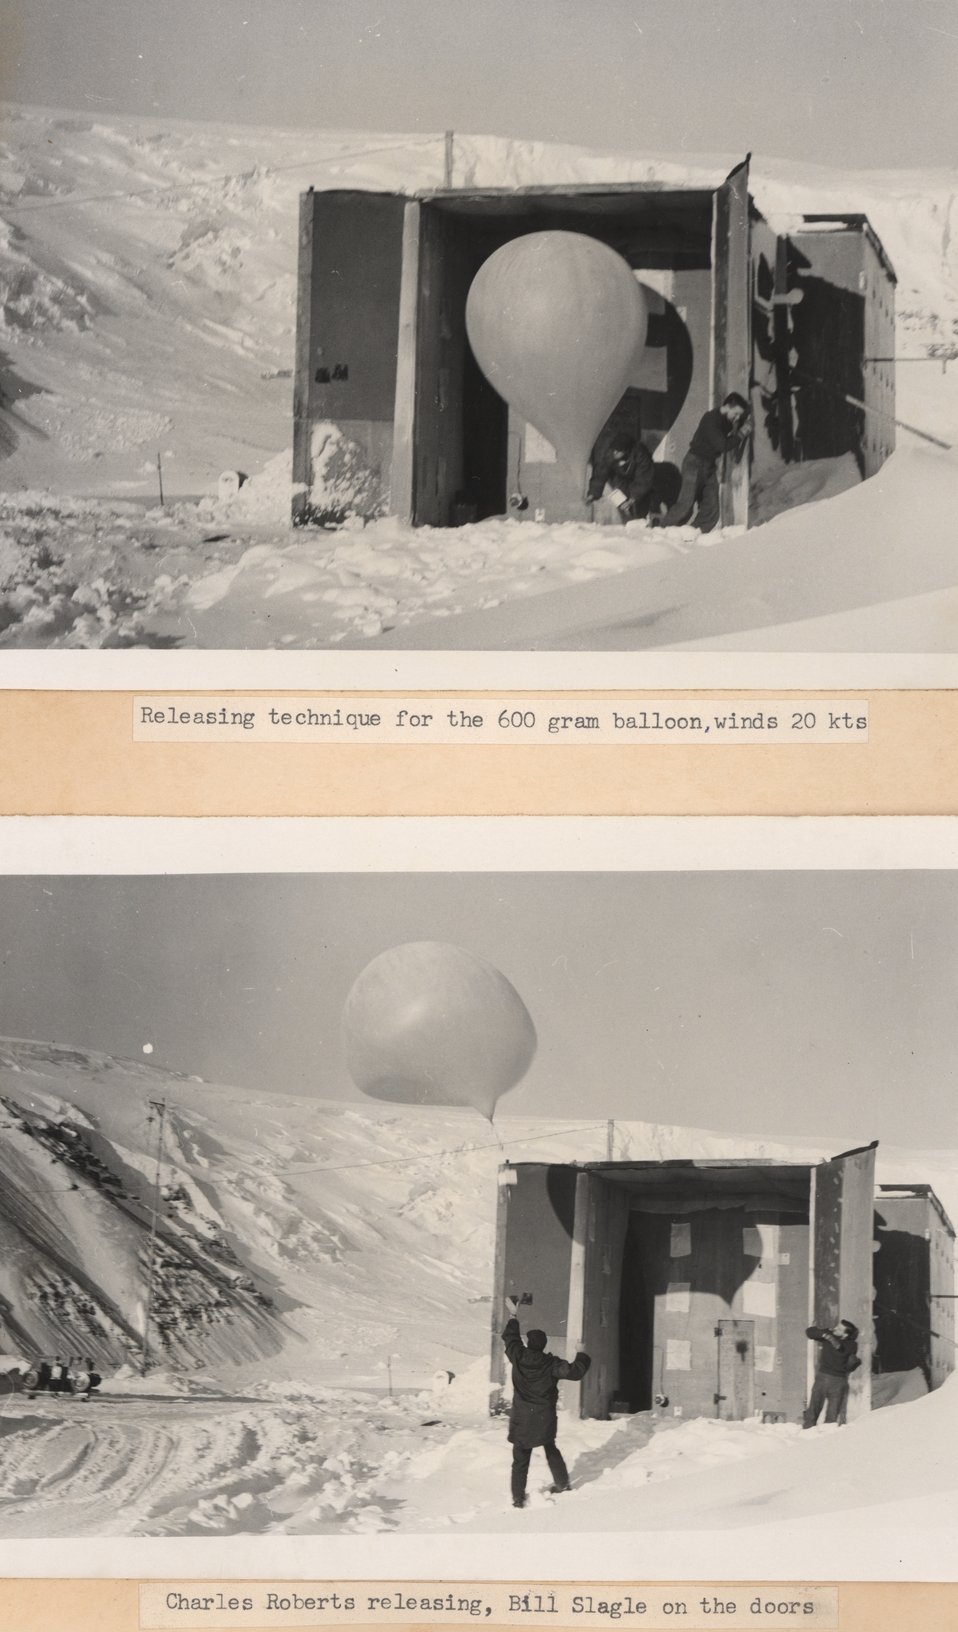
Releasing technique for the 600 gram balloon, winds 20 knowts. Lower image - Charles Roberts releasing, Bill Slagle on the doors.